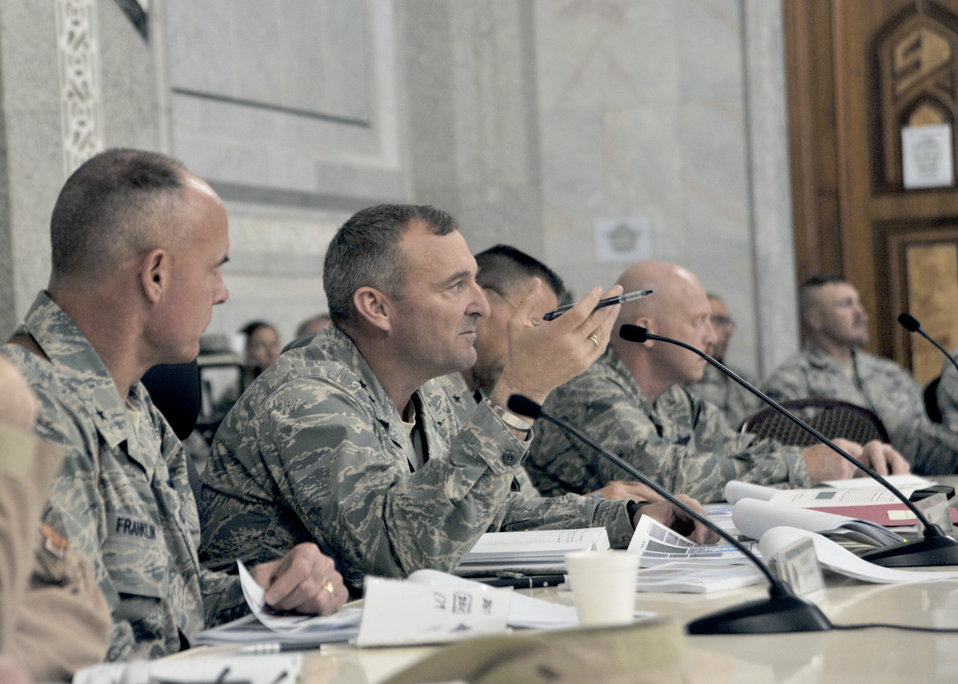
Top Airman in Iraq

Maj. Gen. Joseph Reynes Jr. addresses attendees at the Air Force Central Command-Iraq Planning Conference May 28, 2010, at Camp Victory, Iraq. General Reynes has served as the director of the Air Component Coordination Element in Iraq, the director of the force strategic engagement cell for U.S. forces in Iraq, and 9th Air Expeditionary Task Force, Baghdad, Det. 2 commander, during his 18 months in Iraq.